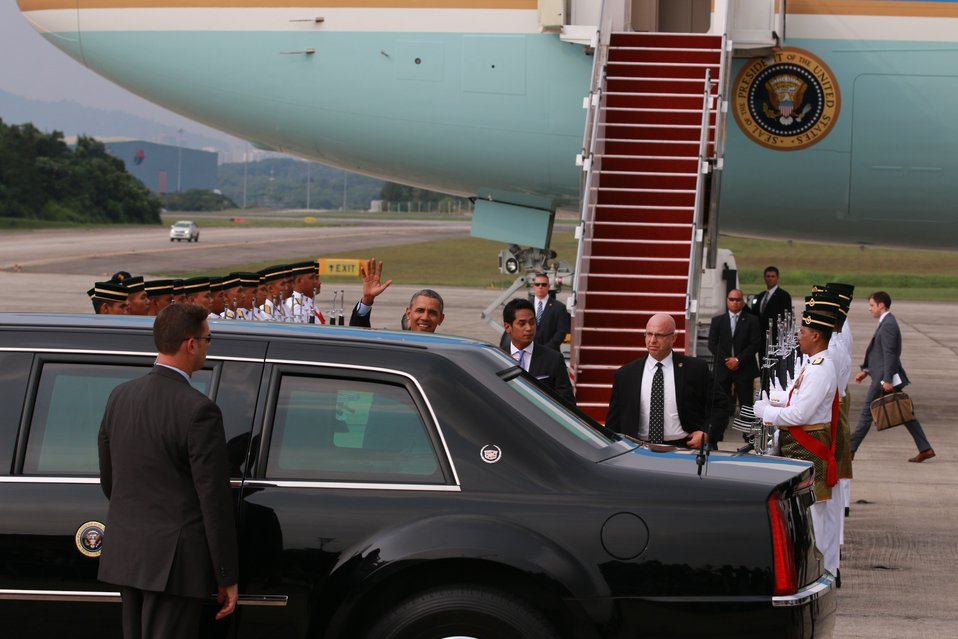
President Obama Arrives in Malaysia

President Barack Obama arrives in Kuala Lumpur, Malaysia on April 26, 2014.